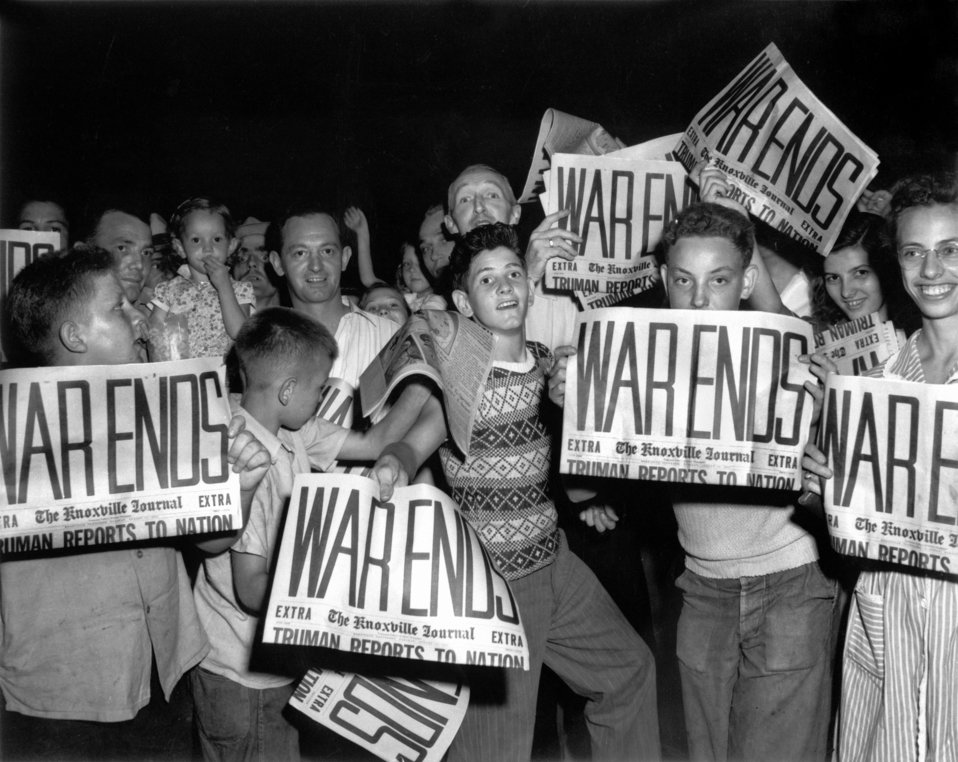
'V.J.' Day - Jackson Square Oak Ridge

PRO946-4 DOE photo Ed Westcott

'V.J.' Day - Jackson Square Oak Ridge Tennessee 8/14/45